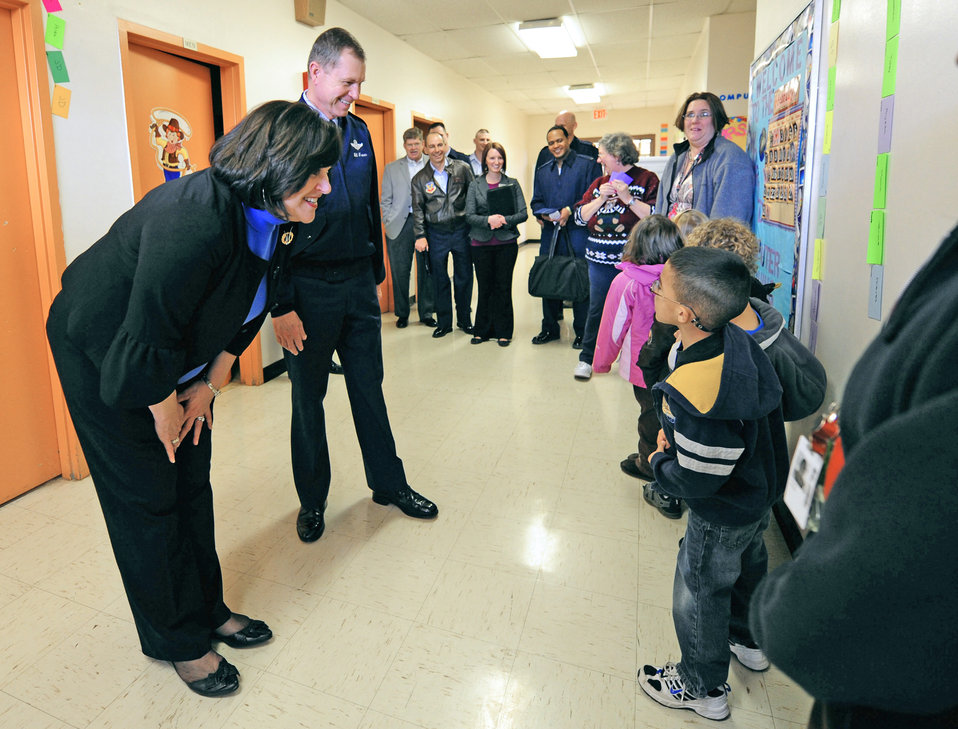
Air Combat Command leader visits Holloman Airmen

Gen. William M. Fraser III and his wife, Bev, talk with children at the Holloman Primary School Feb. 22, 2010, at Holloman Air Force Base, N.M. General and Mrs. Fraser visited with members of Holloman AFB to discuss quality-of-life programs for Airmen and their families. General Fraser is the commander of Air Combat Command.